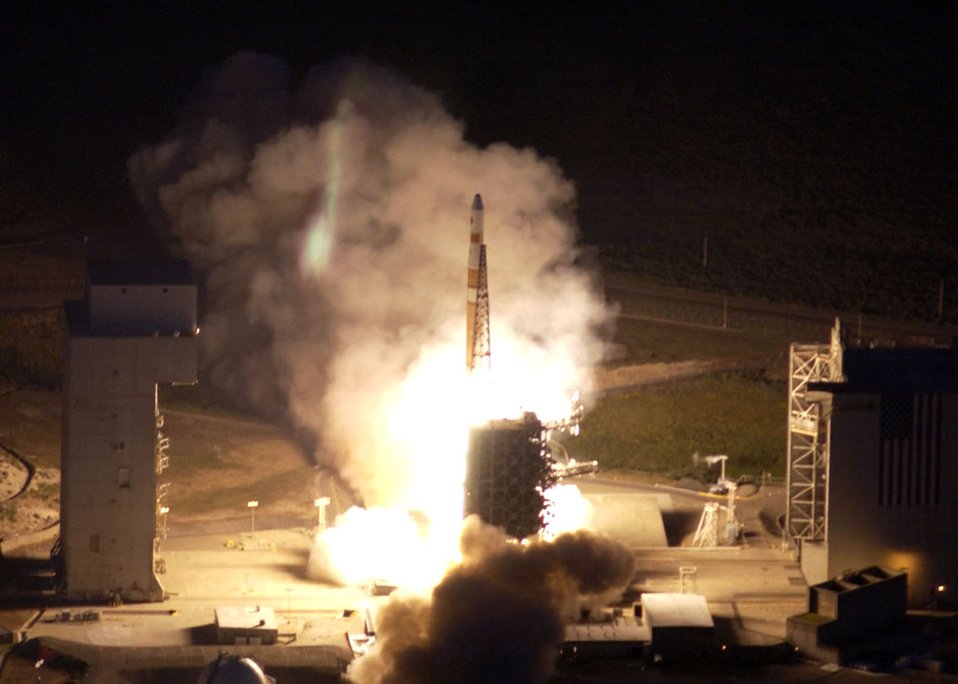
Delta IV launch successful

A Delta IV rocket carrying a payload for the National Reconnaissance Office lifts off from Space Launch Complex 6 at Vandenberg Air Force Base, Calif., on Tuesday, June 27.